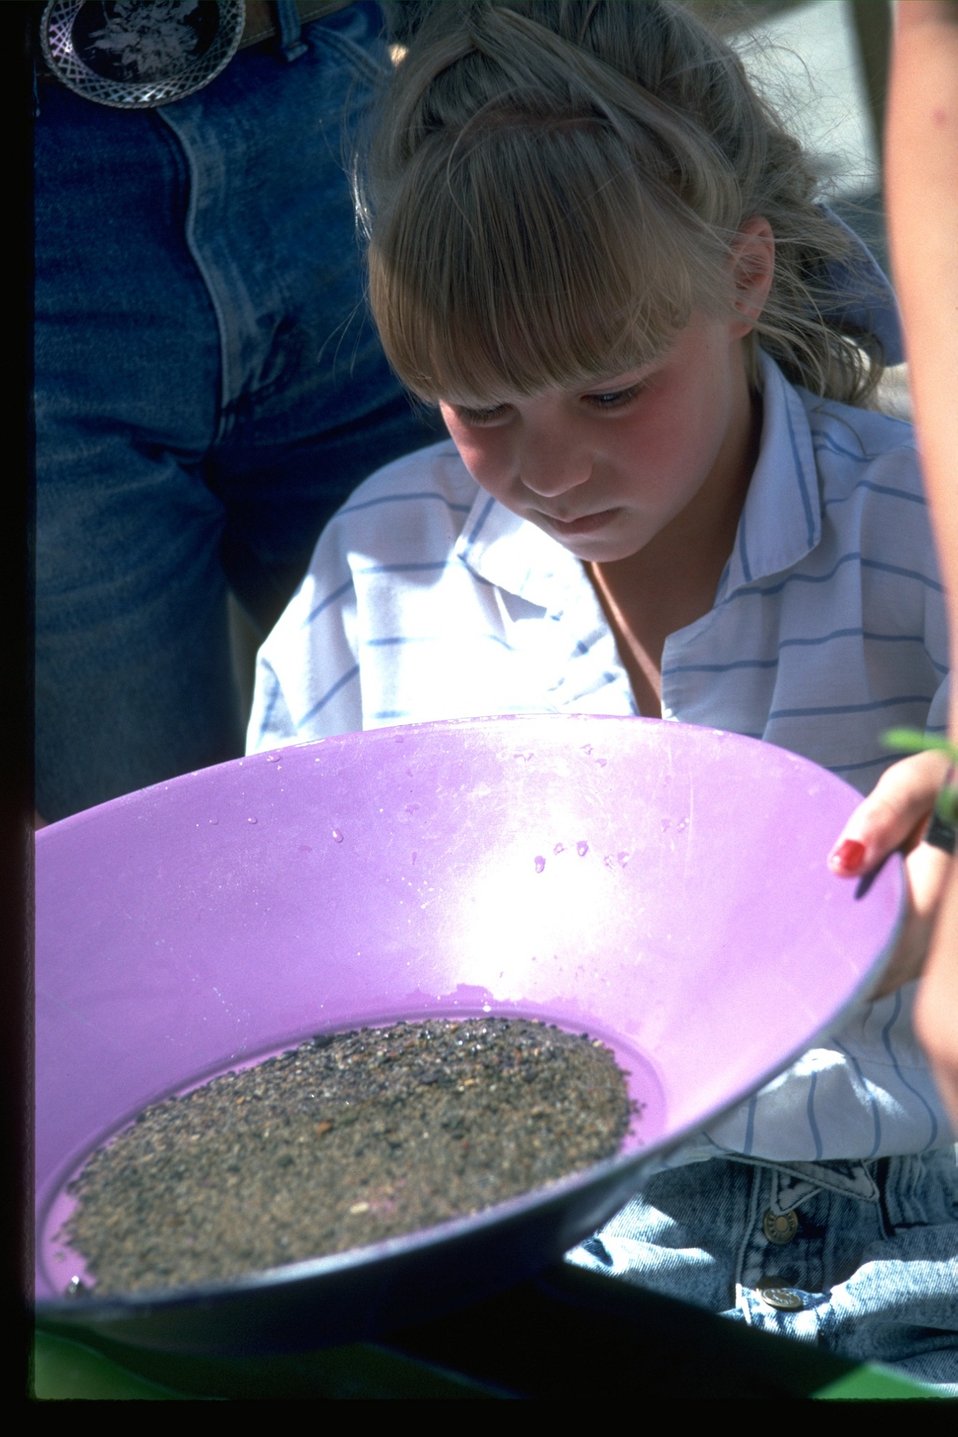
Demonstration of panning (mining method) at the NHOTIC.